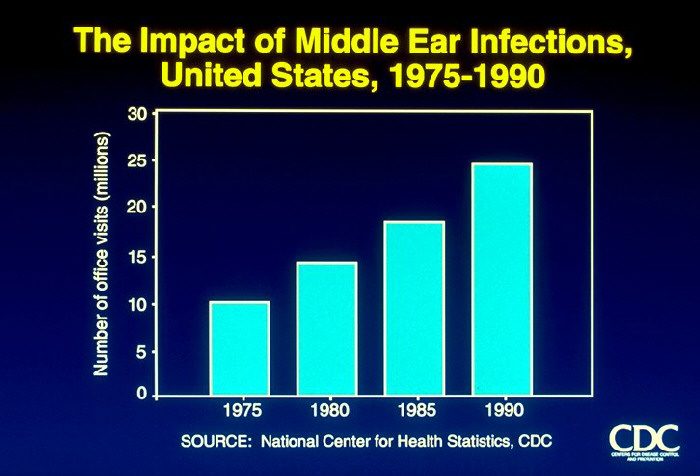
The Impact of Middle Ear Infections, United States, 1975-1990 (graph)